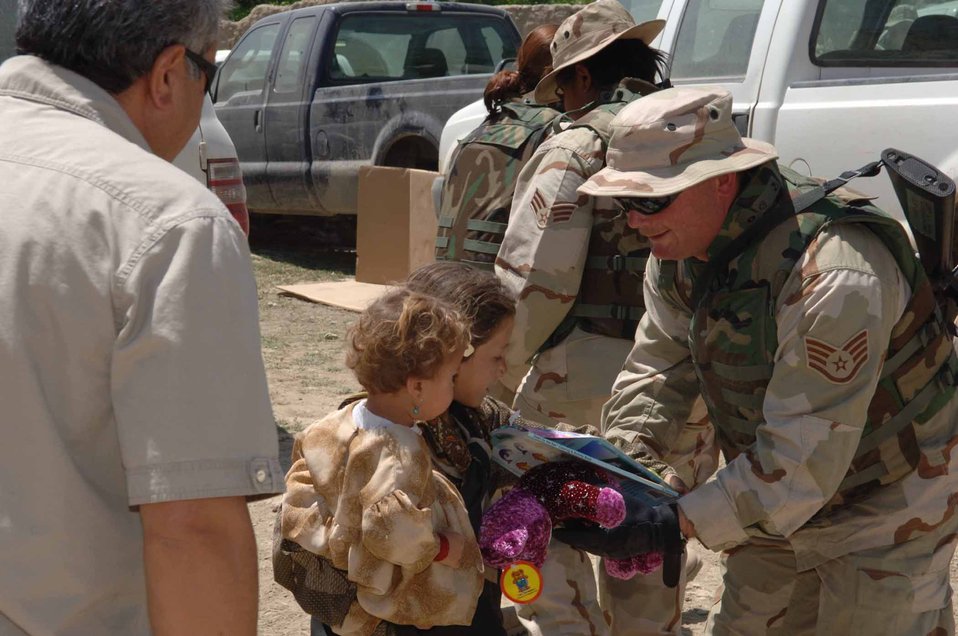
Airmen donate time, supplies to Afghans

PARWAN PROVINCE, Afghanistan -- Staff Sgt. John Golden hands an Afghan child a stuffed animal and coloring book during an adopt-a-village trip here. Airmen from the 455th Air Expeditionary Wing at nearby Bagram Air Base take part in the program to assist villages in Afghanistan with infrastructure, fresh water, school supplies and toys for children. Sergeant Golden is an aerospace ground equipment technician with the 455th Expeditionary Maintenance Squadron and is deployed from Pope Air Force Base, N.C.